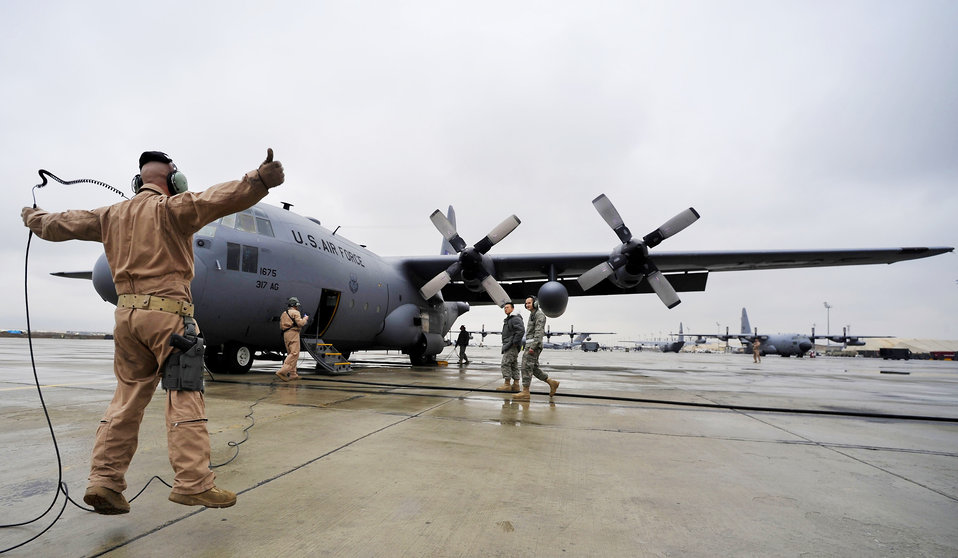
C-130 low-cost, low-altitude combat airdrops now operational

Tech. Sgt. Andrew Briggs gives a signal to release the chocks on a C-130 Hercules before the crew flies a mission to airdrop four low-cost, low-altitude resupply bundles Feb. 6, 2010, in Afghanistan. Sergeant Briggs is a loadmaster with the 774th Expeditionary Airlift Squadron at Bagram Airfield, Afghanistan.